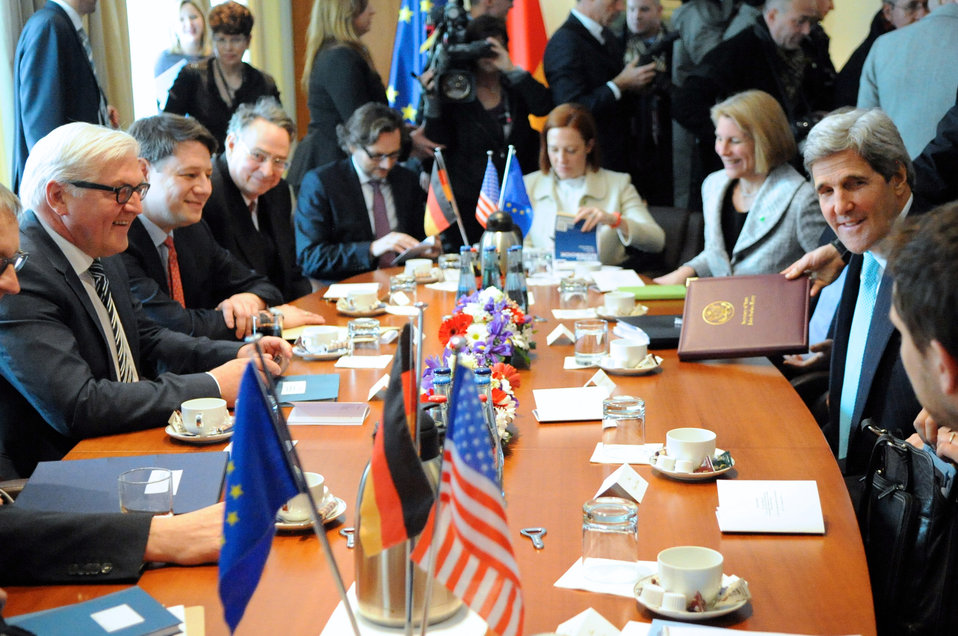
Secretary Kerry and Team Meet With German Foreign Minister Steinmeier

German Foreign Minister Frank-Walter Steinmeier, U.S. Secretary of State John Kerry, and their respective teams sit across from one another before a bilateral discussion in Berlin on January 31, 2014.